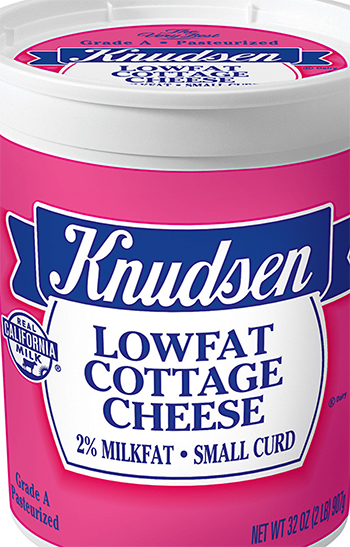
RECALLED – Cottage Cheese products

May 17, 2014 – Product Recall – Kraft Foods Group Voluntarily Recalls Select Cottage Cheese Products Due to Out-of-Standard Storage Temperatures
Certain Knudsen Cottage Cheese, Breakstone’s Cottage Cheese, Simply Kraft Cottage Cheese and Daily Chef Cottage Cheese Products Included in the Recall
.